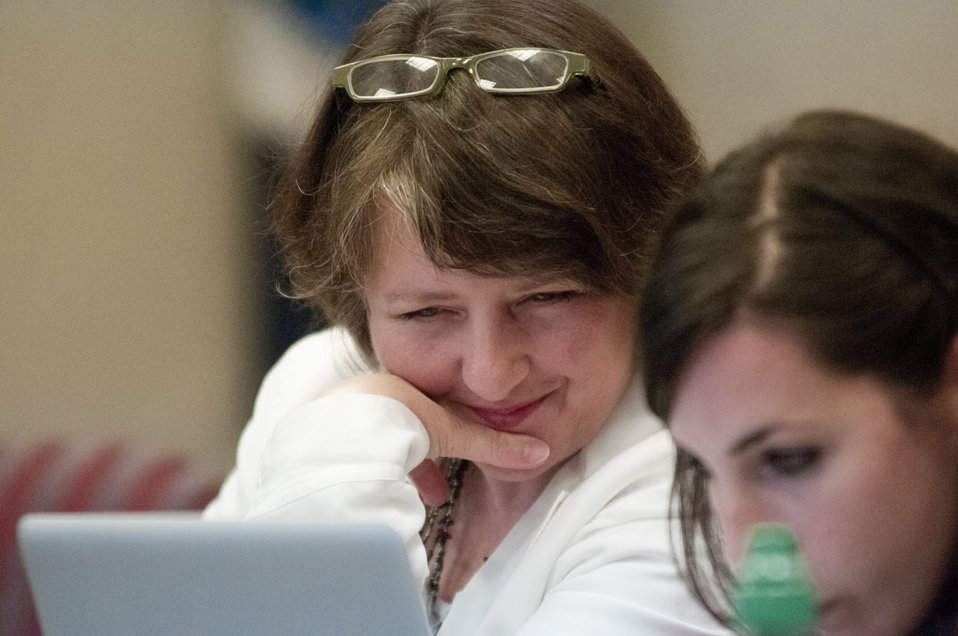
Agriculture Deputy Secretary Kathleen Merrigan, in white, hosts a live Twitter chat focused on the Department’s support of local and regional food systems and the recent release of the 2.0 version of the Know Your Farmer, Know Your Food Compass on Tuesday, July 24, 2012, in Washington, D.C. Deputy Secretary Merrigan utilized her staff and other subject matter experts to provide useful answers to questions from the public during the #ASKUSDA Virtual Office Hours on Local Food.